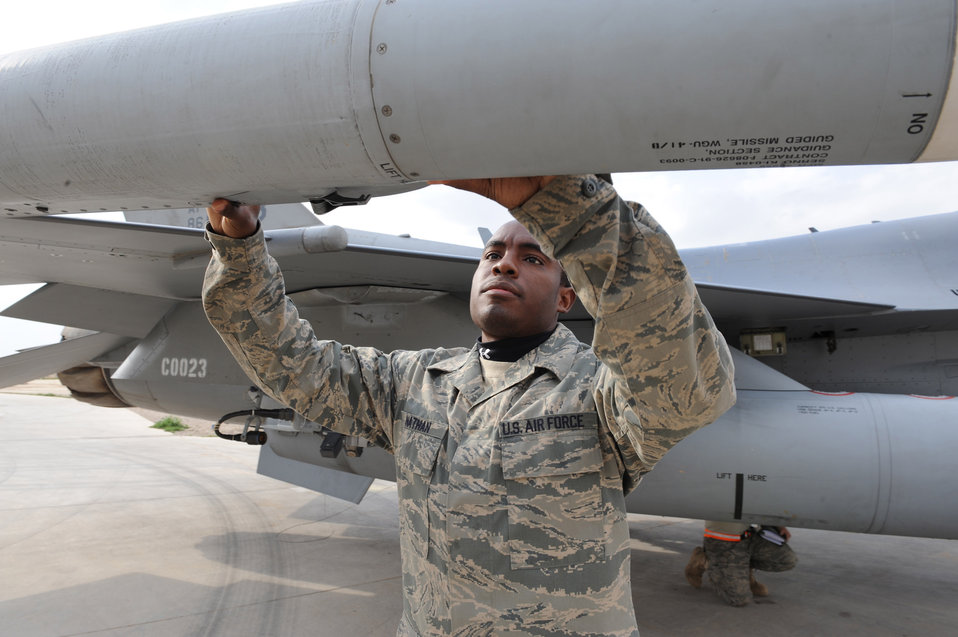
Honoring a brother's sacrifice

Staff Sgt. Joe Nathan Jr. inspects an F-16 Fighting Falcon after its return from a mission Feb. 23 at Joint Base Balad, Iraq. As an F-16 weapons loader, Sergeant Nathan is responsible for loading missiles onto the F-16 as well as performing post-load inspections on the weapons. Sergeant Nathan is a 332nd Expeditionary Aircraft Maintenance Squadron Tiger Aircraft Maintenance Unit weapons loader deployed from Homestead Air Reserve Base, Fla. He is a native of Macon, Ga.